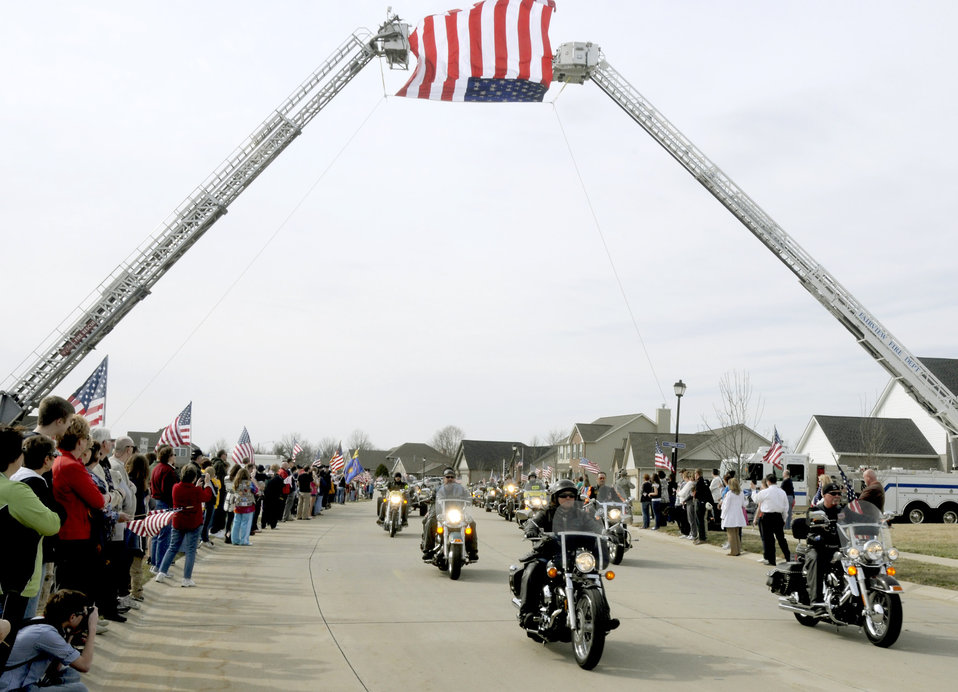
They stand for Zac

Patriot Guard Riders lead the funeral procession route of Airman 1st Class Zachary Cuddeback March 12, 2011, in O'Fallon, Ill. Airman Cuddeback and another Airman were killed March 2 when a man opened fire on a bus carrying U.S. Airmen at an airport in Frankfurt, Germany. Airman Cuddeback will be laid to rest next to his grandfather at a cemetery in O'Fallon, Ill.